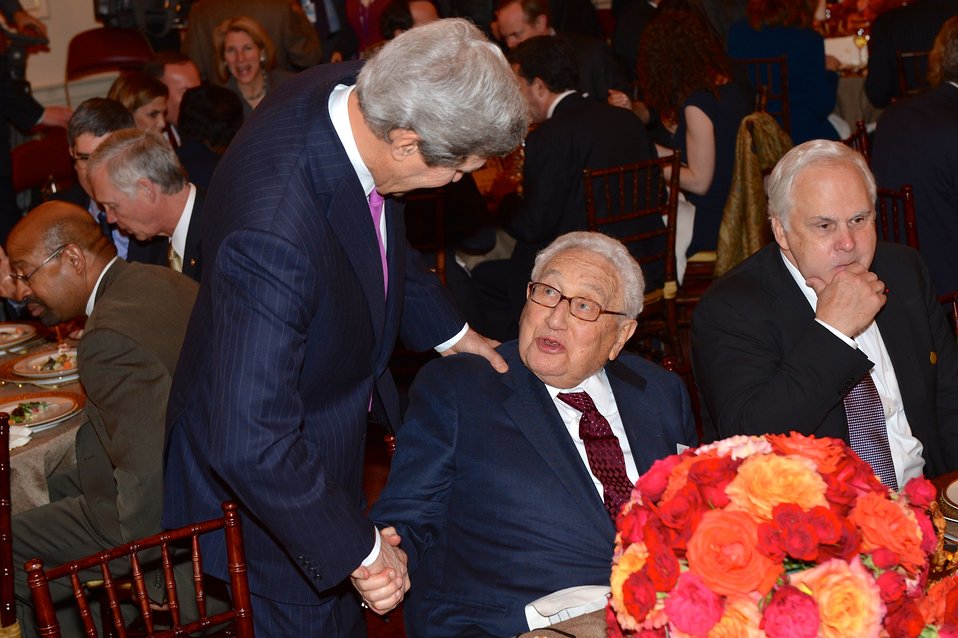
Secretary Kerry Shakes Hands With Former Secretary Kissinger

U.S. Secretary of State John Kerry shakes hands with former Secretary of State Henry Kissinger during a State Lunch for French President Francois Hollande that Secretary Kerry co-hosted with Vice President Joe Biden at the U.S. Department of State in Washington, D.C., on February 11, 2014.